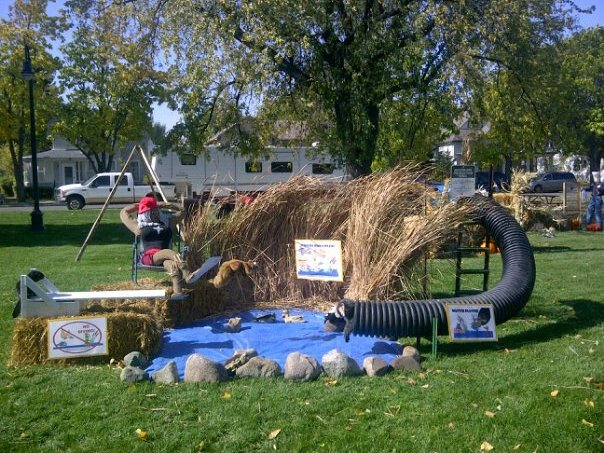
2011 Scarecrow Festival